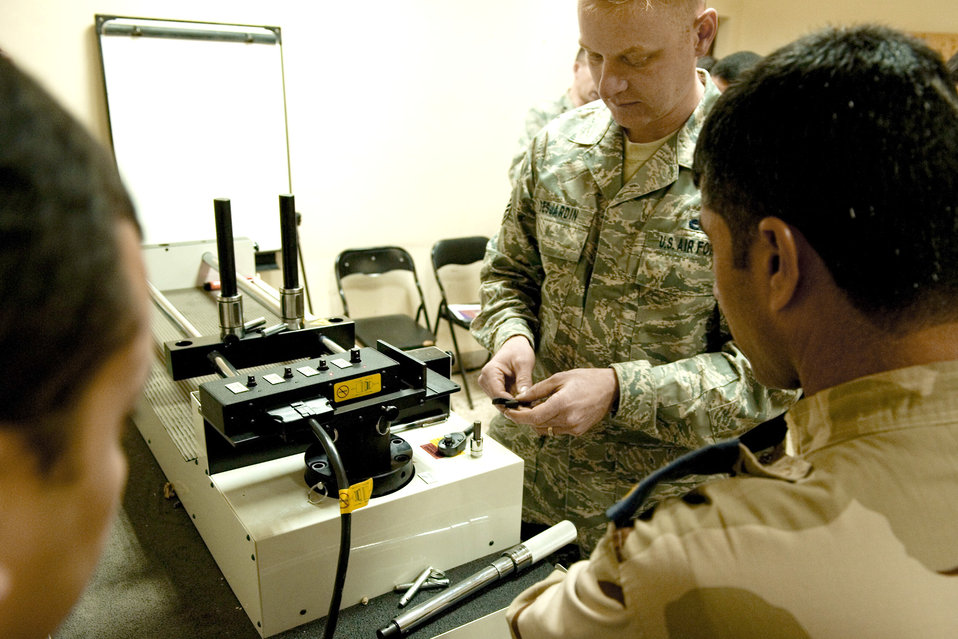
An airman is only as good as his tools

Master Sgt. Joel Desjardin trains Iraqi airmen on the proper calibration of torque wrenches Feb. 2, 2011, at New Al-Muthana Air Base, Iraq. Sergeant Desjardin is a member of the 4th Maintenance Group. He is part of a two-man team sent to train Iraqi airmen.